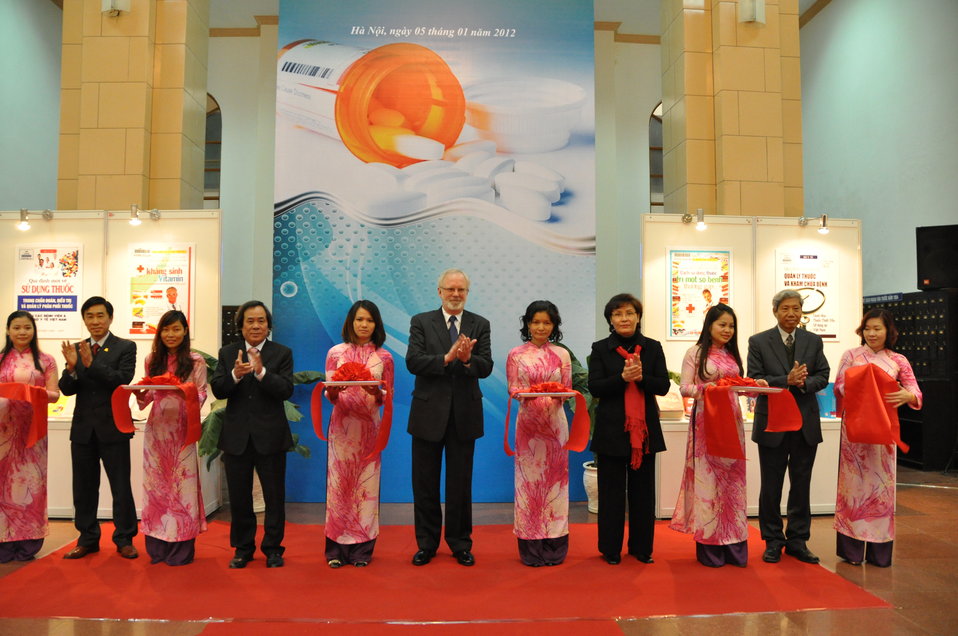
U.S. Ambassador David Shear opens safe medicine exhibition in Hanoi

Safe Medicine Exhibition